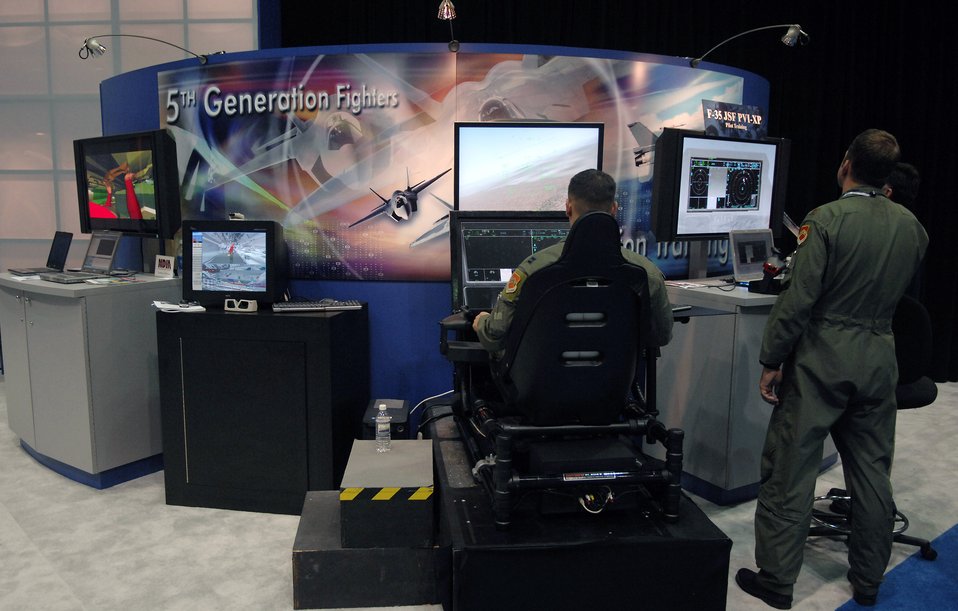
Technology conference powers down

Capt. Matt Poisson (left) tries out some of the newest technology on an F-35 Joint Strike Fighter simulator while Maj. Jeff Simons studies his fellow pilot's actions Nov. 30 during the Interservice/Industry Training, Simulation and Education Conference in Orlando, Fla. Major Simons and Captain Poisson are F-16 Fighting Falcon pilots from Luke Air Force Base, Ariz.